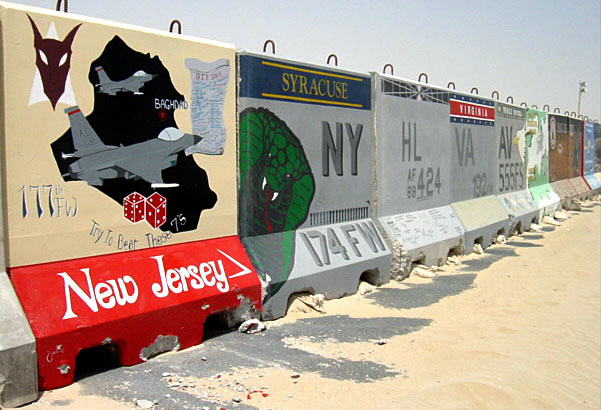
Where are you from?

SOUTHWEST ASIA -- Painted Jersey barriers surround the flightline at one forward-deployed location. The paintings depict various Air National Guard units who have served at the installation.